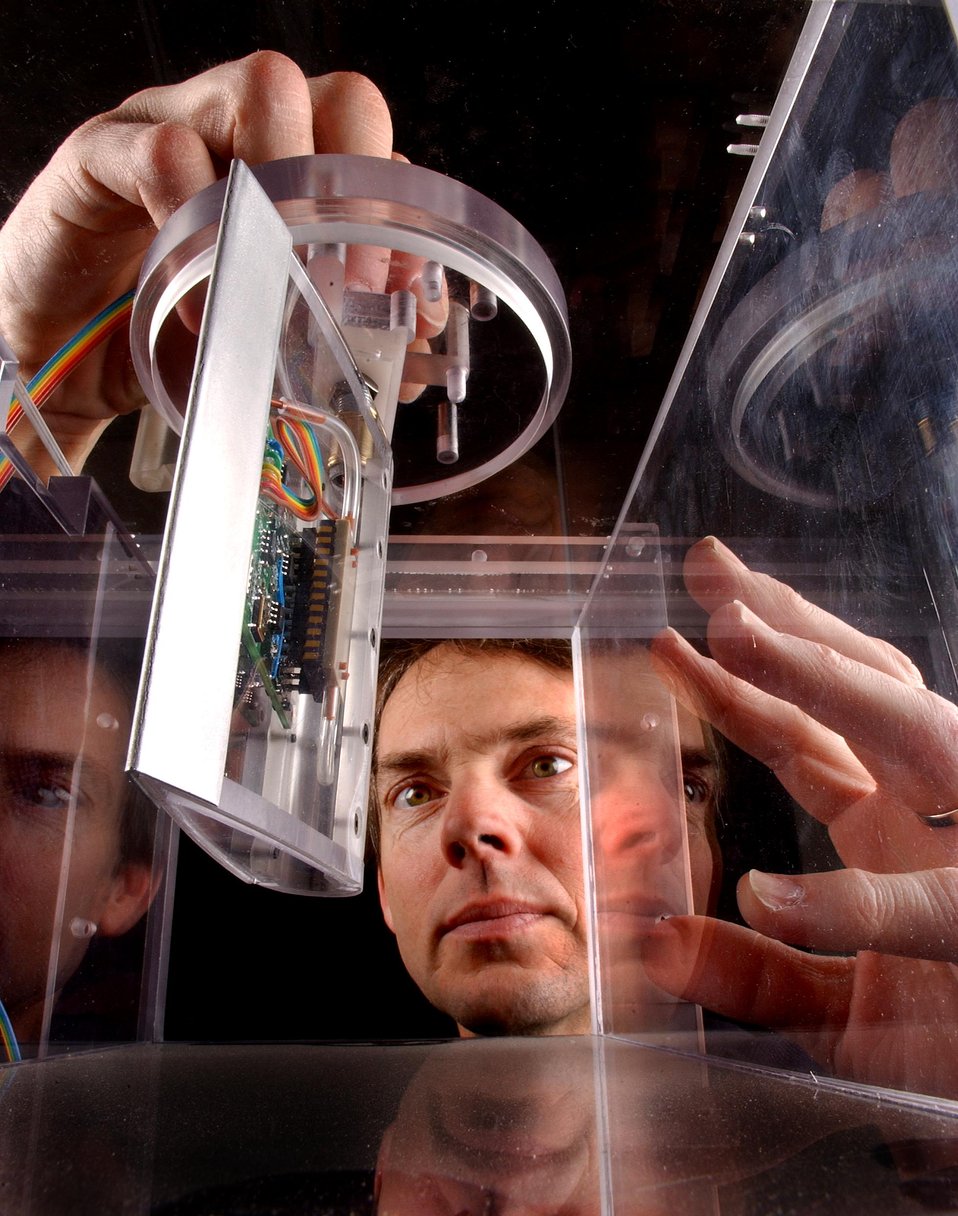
SNL SCIENTIST, D. ADKINS WORKING WITH THE SNIFFERSTAR CHEMICAL SENSOR.

THE SNIFFERSTAR CHEMICAL SENSOR MOUNTS ON A DRONE AIRCRAFT FOR REMOTE SURVEILLANCE OF BATTLEFIELD SITUATIONS. DEVELOPED UNDER A SHARED VISIONS PROGRAM WITH LOCKHEED MARTIN, THE ENTIRE MODULE WEIGHS LESS THAN A GOLF BALL AND USES THE MOTION OF THE CRAFT TO COLLECT SAMPLES FOR ANALYSIS. SNIFFERSTAR IS SENSITIVE TO BLISTER AND NERVE AGENTS.